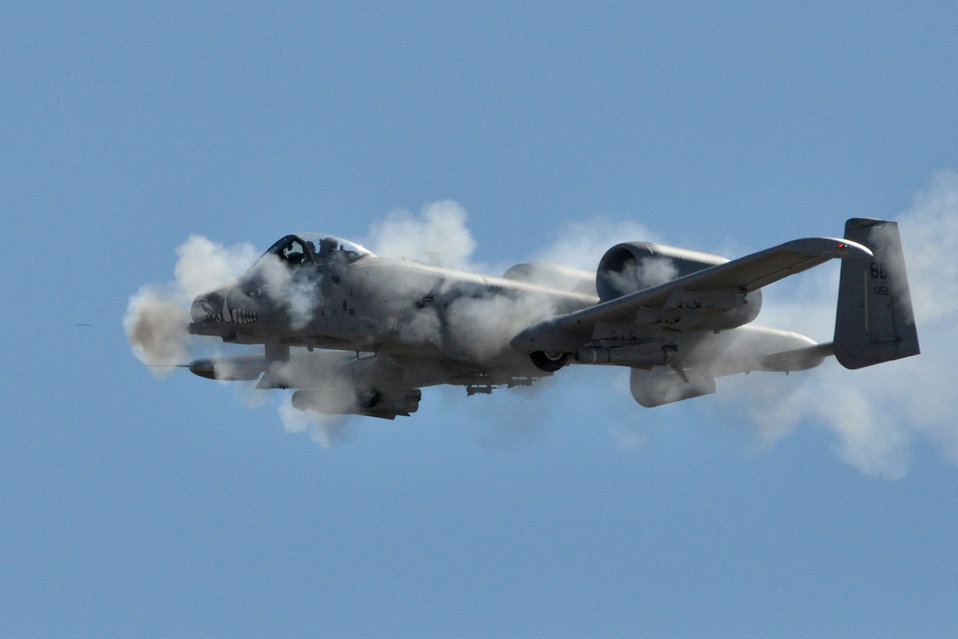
Hawgsmoke 2010

Capt. Jason Cobb fires a volley of 30-millimeter rounds Oct. 14, 2010, at a target on the Saylor Creek Range in Idaho during Hawgsmoke 2010. Captain Cobb is an A-10 Thunderbolt II pilot assigned to the Air Force Reserve Command's 47th Fighter Squadron at Barksdale Air Force Base, La. He earned two personal awards during the competition.